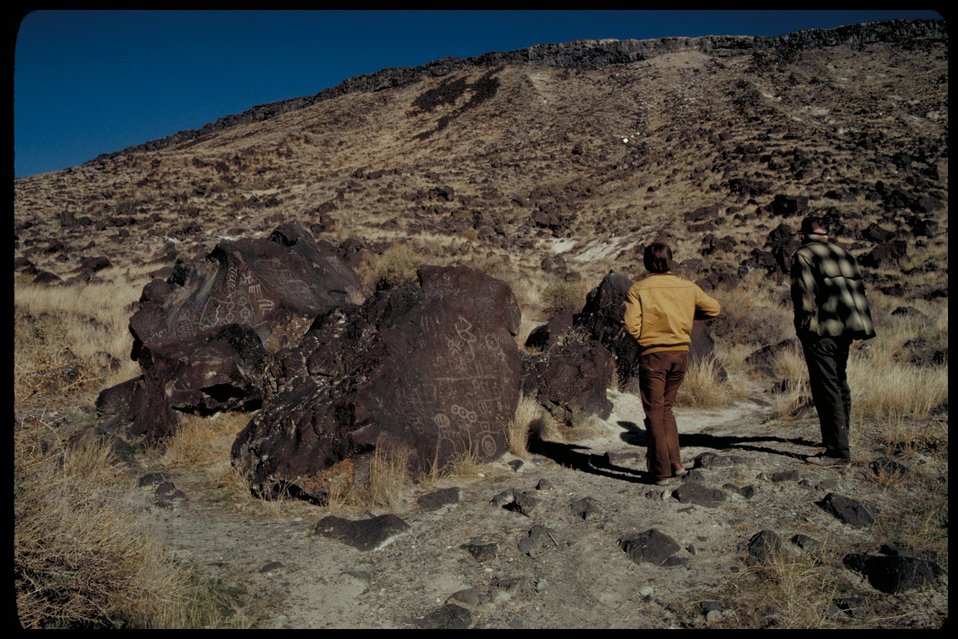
Petroglyphs in the Birds of Prey Conservation Area LSRD Snake River Canyon